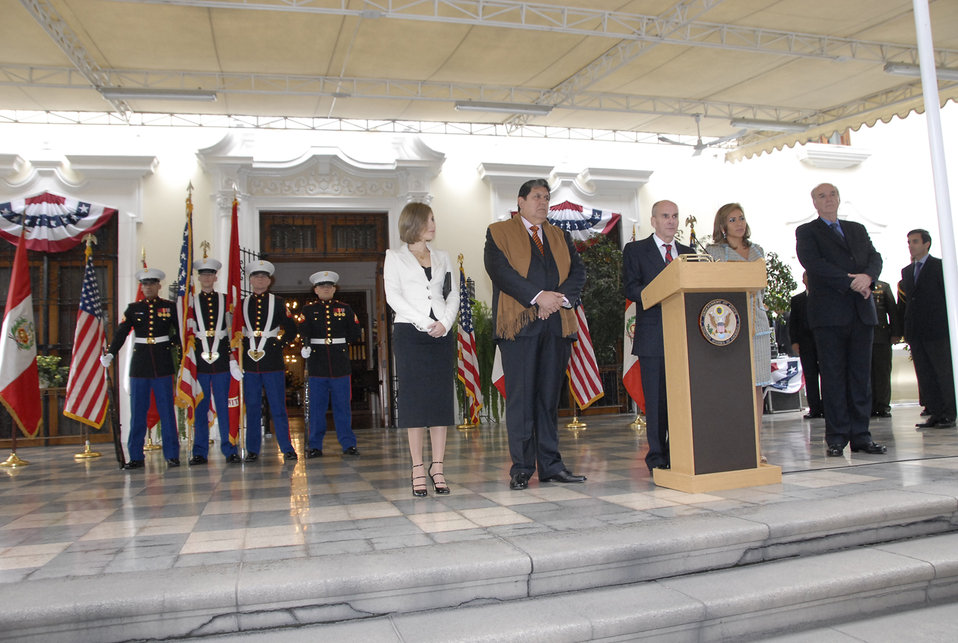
Ambassador McKinley Delivers Remarks

U.S. Ambassador to Peru Michael McKinley delivers remarks during the U.S. Independence Day celebration at the U.S. Embassy Lima in Peru on July 4, 2010. Also featured in the photo are (left to right) the U.S. Marine Corps Color Guard, Josefina Garcia Nores, and Fatima McKinley, wife of Ambassador McKinley.